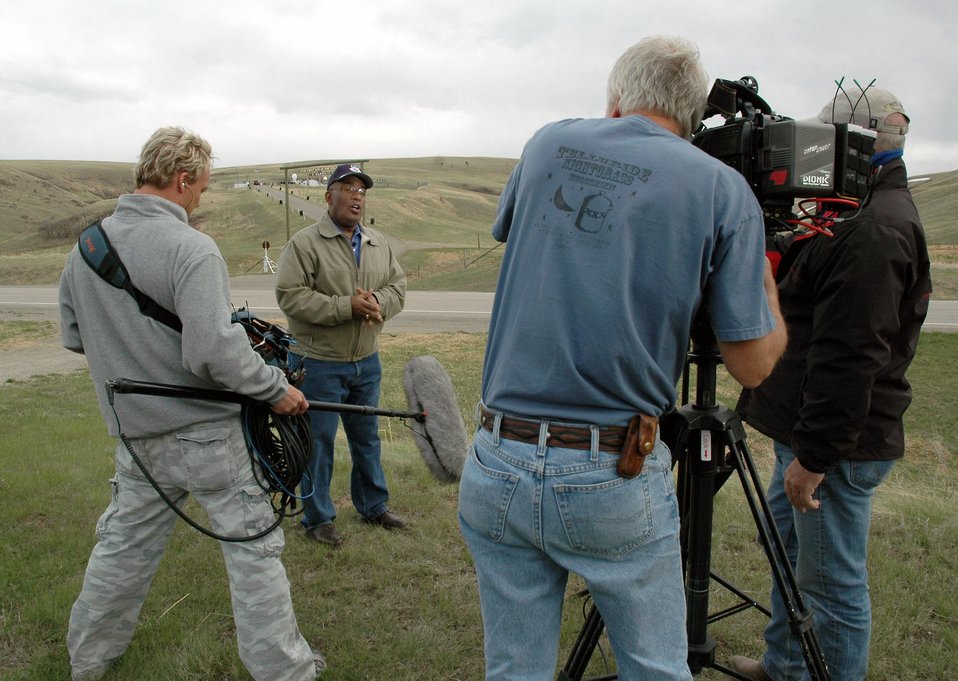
Today Show features Malmstrom Airmen, mission

Al Roker, NBC?s Today Show co-host, and his television crew, film outside a missile alert facility May 5 near Malmstrom Air Force Base, Mont. Mr. Roker was preparing to broadcast live from the area May 6 as part of their